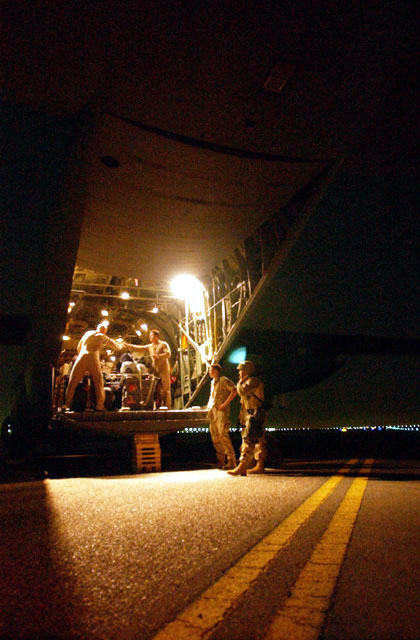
Humanitarian aid

OPERATION IRAQI FREEDOM -- U.S. Air Force personnel secure humanitarian pallets onto a C-130 Hercules that will be flown to Baghdad to help Iraqi citizens in need. The flight marked the first of flights delivering supplies that are being donated from the people of Kuwait as part of a coordinated effort with the U.S. military to transport and deliver aid to the people of Iraq in support of Operation Iraqi Freedom. Arlo Abrahamson)